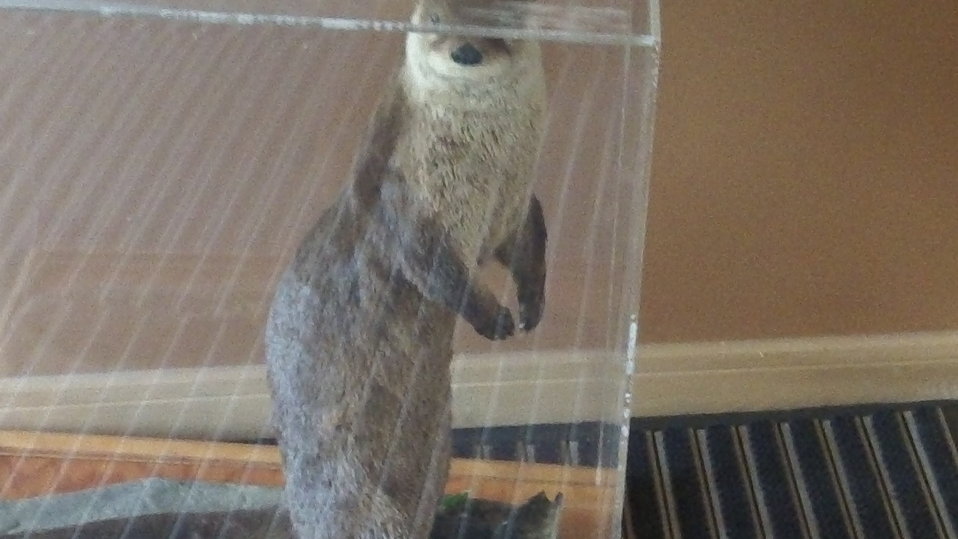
Assabet River National Wildlife Refuge, Sudbury, MA.